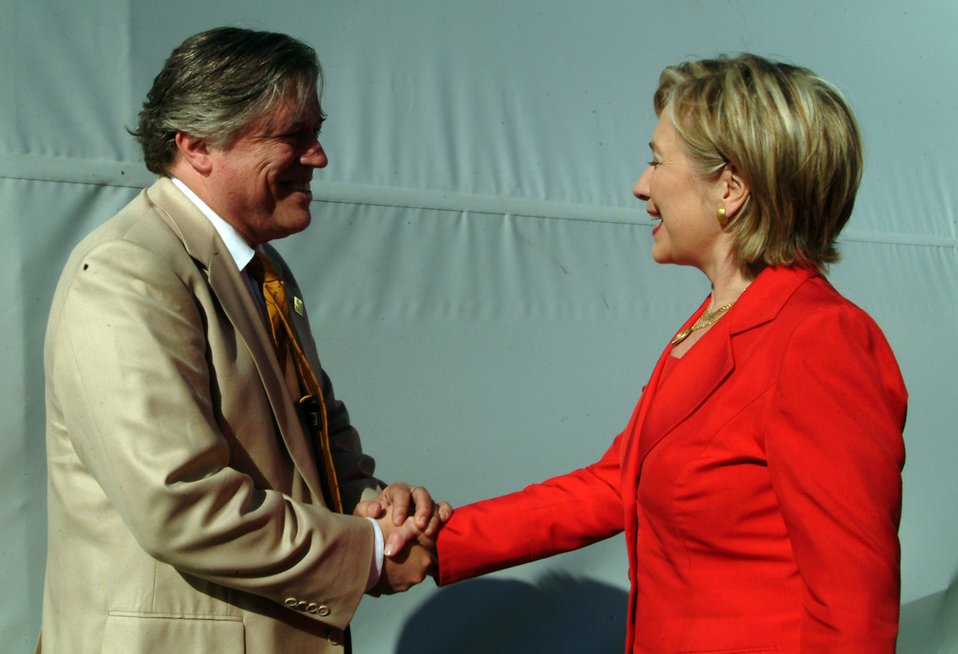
Secretary Clinton at Simeprode Power Plant

U.S. Secretary of State Hillary Rodham Clinton during a visit to the Simeprode power plant in Monterrey, Mexico March 26, 2009.